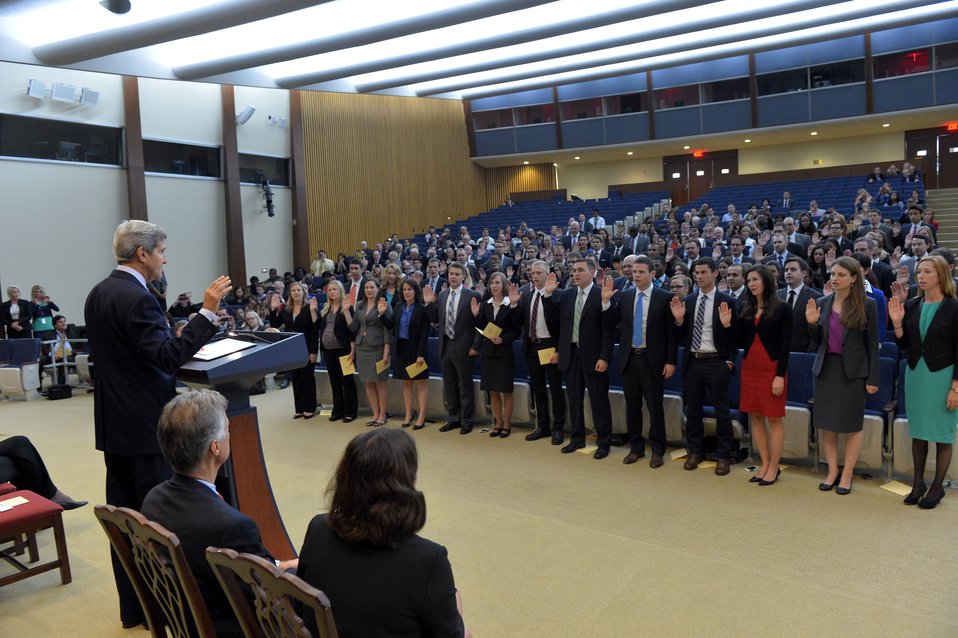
Secretary Kerry Hosts a Joint Swearing-In Ceremony

U.S. Secretary of State John Kerry hosts a joint swearing-in ceremony for the 174th Foreign Service Generalist Orientation Class and the Presidential Management Fellow Orientation Class at the U.S. Department of State in Washington, D.C., on October 18, 2013.